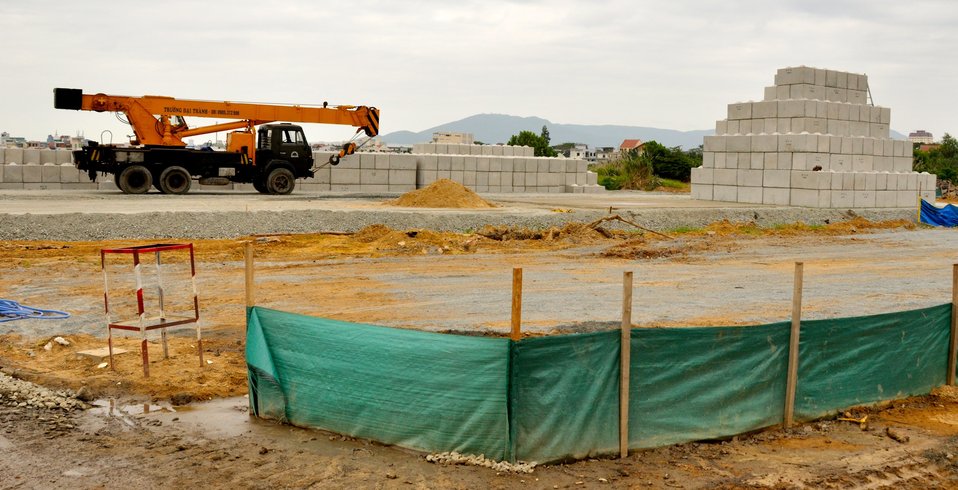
Site Preparation for Environmental Remediation of Dioxin Contamination at Danang Airport

Danang Airport, January 22, 2013